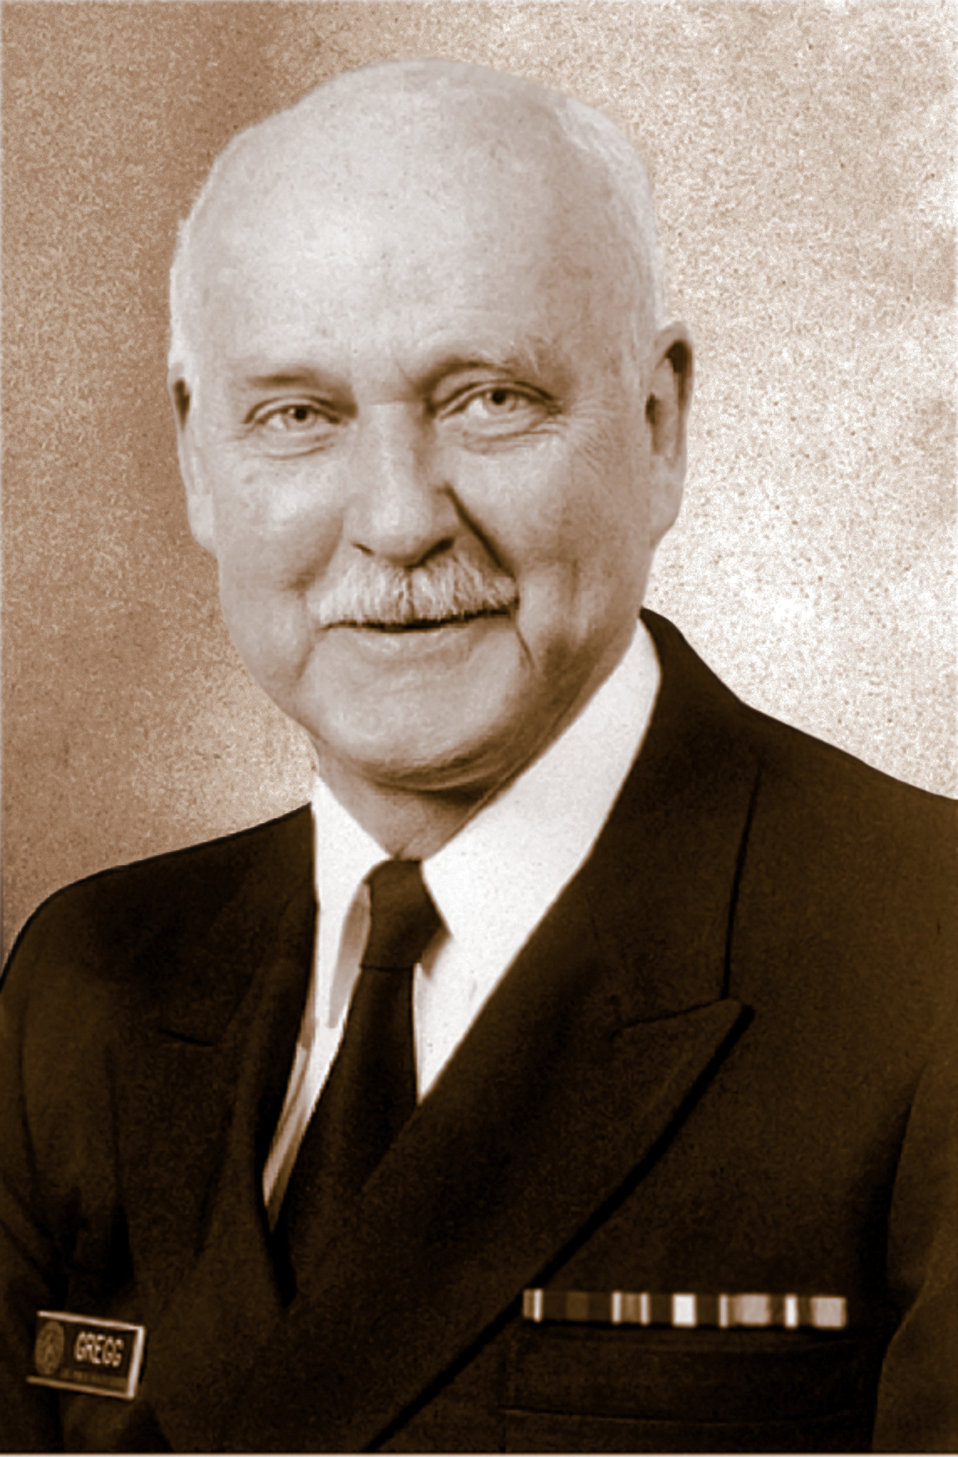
Michael B. Gregg, M.D. (1930 - 2008)